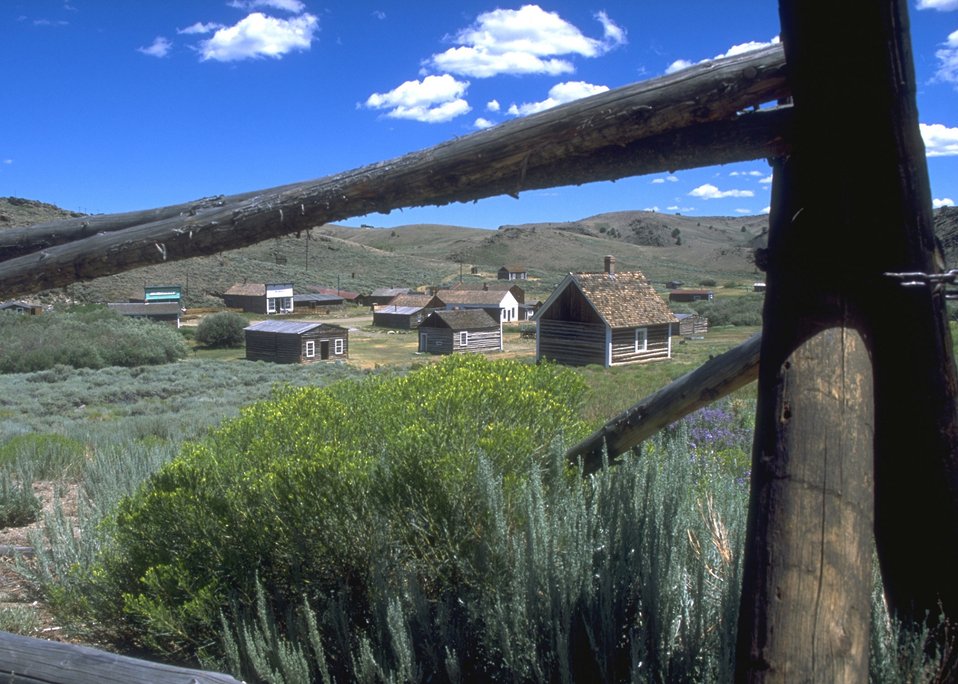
Restored buildings at South Pass City, Lander Field Office.